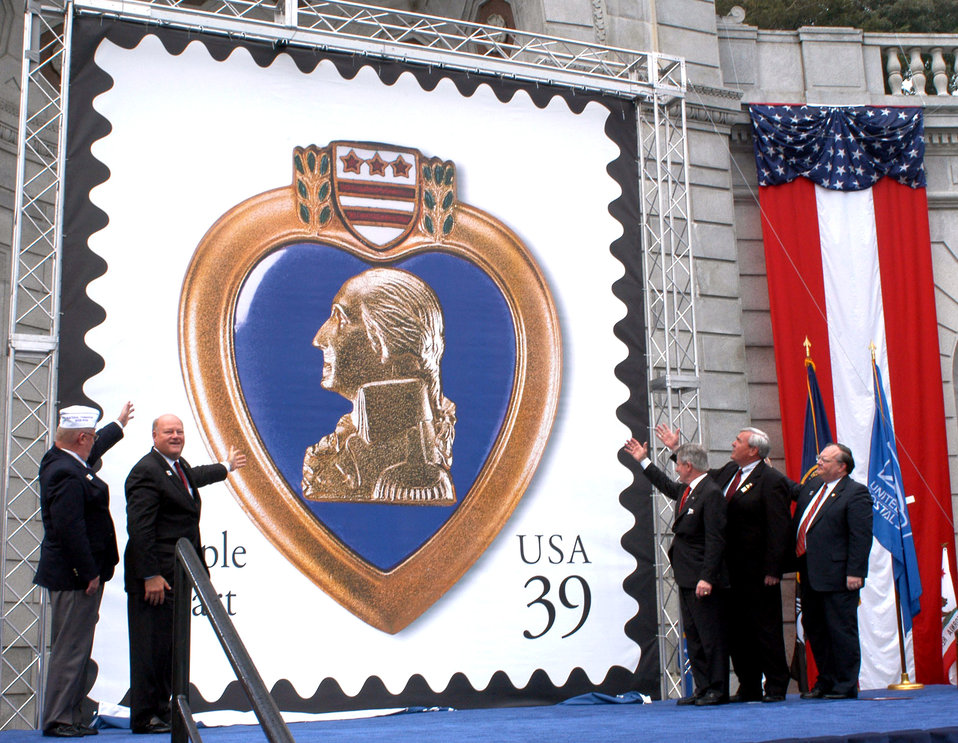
Postal Service reissues Purple Heart stamp

Officials from the Department of Veterans Affairs and the U.S. Postal Service unveil the new version of the Purple Heart definitive stamp at Arlington National Cemetery on Friday, May 26, 2006.